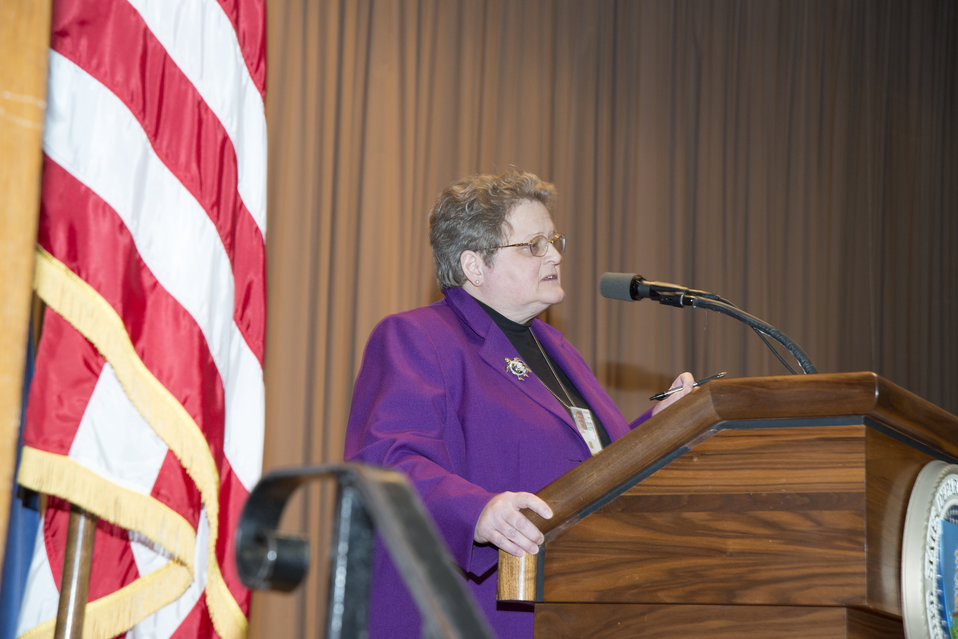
U.S. Department of Agriculture (USDA) Office of Chief Information Office (OCIO) Chief Information Officer Cheryl Cook speaks at USDA’s Women’s History Month Observance in the Jefferson Auditorium at USDA on Thursday, Mar. 13, 2014. The theme for this year’s observance is “Celebrating Women of Character, Courage, and Commitment”.